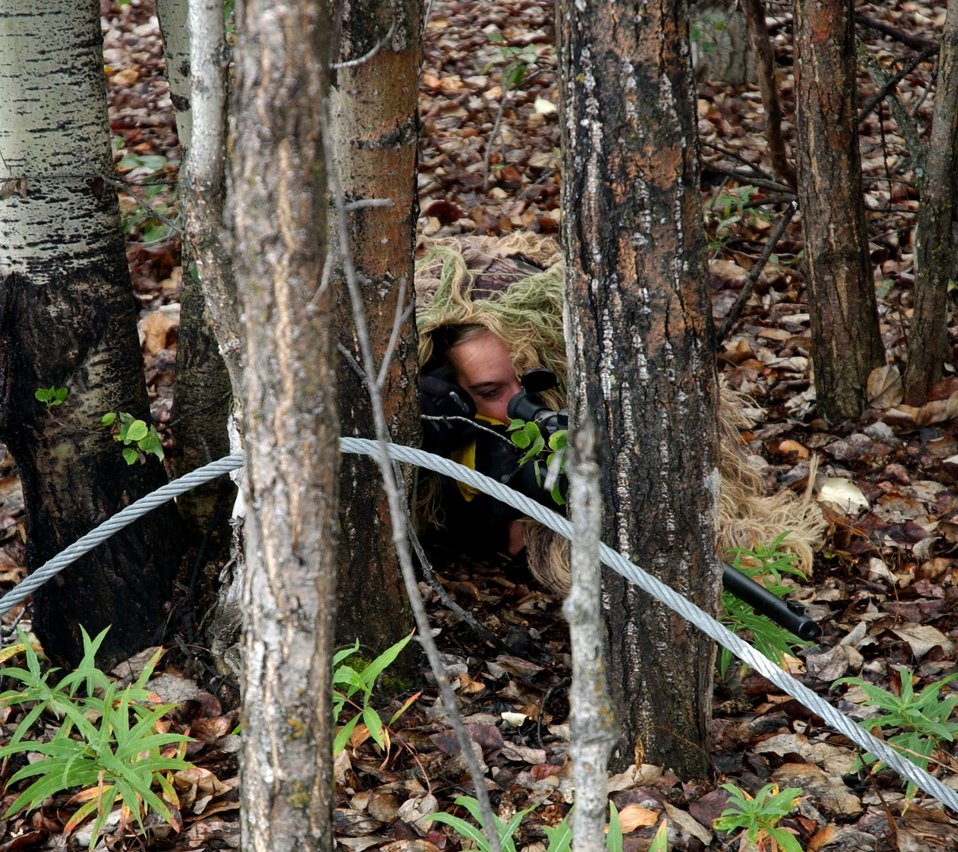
Under cover

Airman 1st Class Kristin Ferris positions herself in the brush during an exercise at Eielson Air Force Base, Alaska, on Aug. 8. Airman Ferris is one of five enlisted female snipers in the Air Force and participated in a training exercise to eliminate a terrorist in a hostage situation. She is assigned to the 354th Security Forces Squadron.